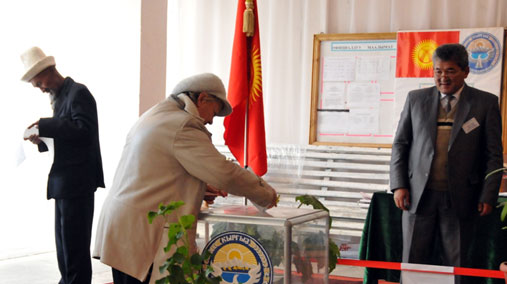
Kyrgyz cast their ballots at a polling station in Kyrgyzstan, October 10, 2010.